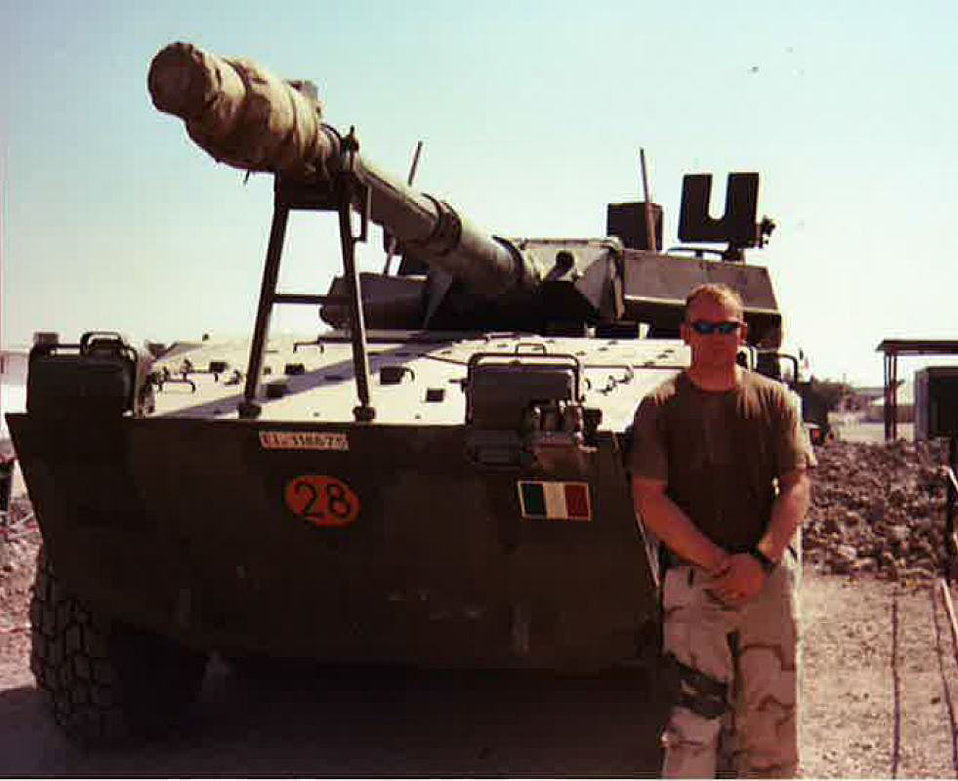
Jeremy Karsten-Midwest Region

Jeremy Karsten, a member of the U.S. Army Reserve, is now an Accountant in the Midwest Region’s Department of Budget and Finance.